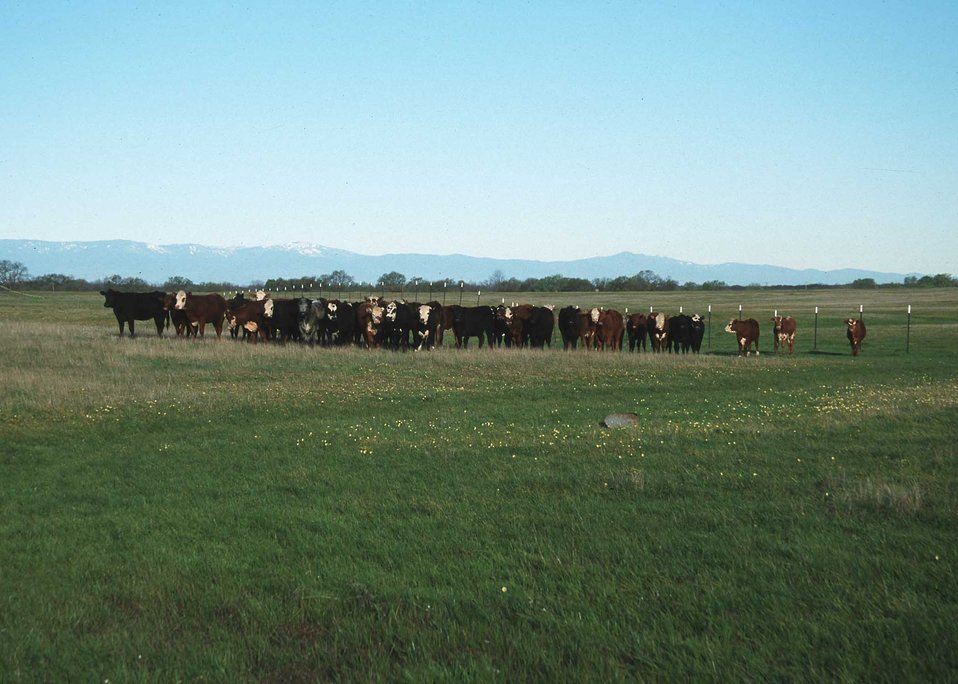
Cattle in vernal pool area. When well managed, cattle grazing is complimentary use of vernal pools.